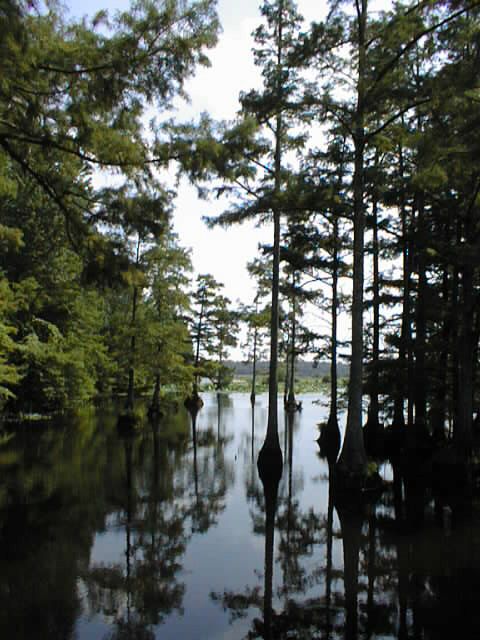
MS-Sam D. Hamilton Noxubee Refuge

A view of the refuge's Doyle Arm, an extension of Bluff Lake popular with bank fishermen and photographers. Alligators can sometimes be seen among the cypress trees.